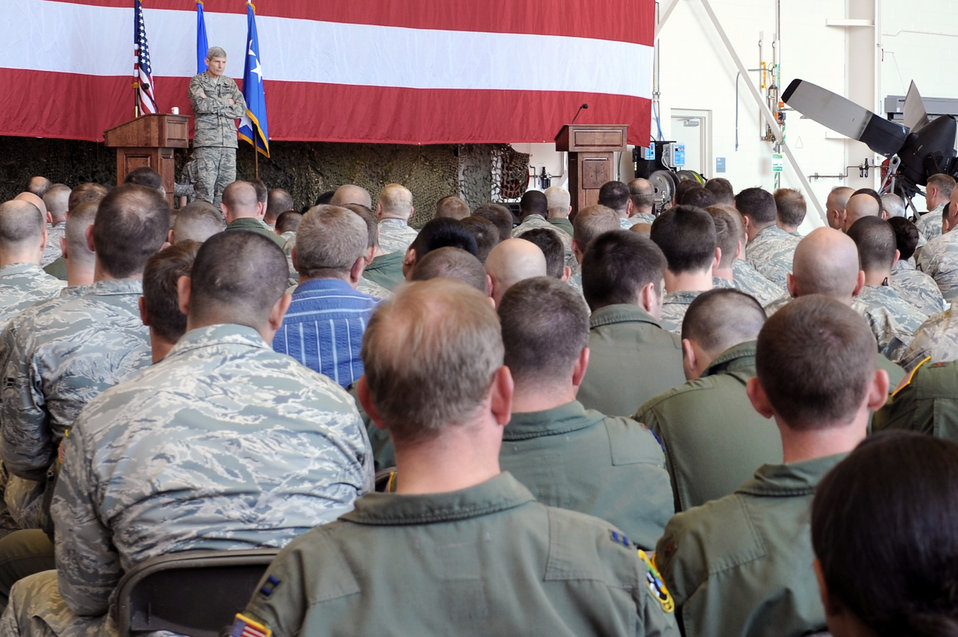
CSAF addresses AF issues, surveys tornado damage at Little Rock AFB

Air Force Chief of Staff Gen. Norton Schwartz answers questions from Airmen May 4, 2011, during an all call at Little Rock Air Force Base, Ark. General Schwartz answered questions regarding a variety of topics, including the current Air Force operations tempo and future deployment outlook.